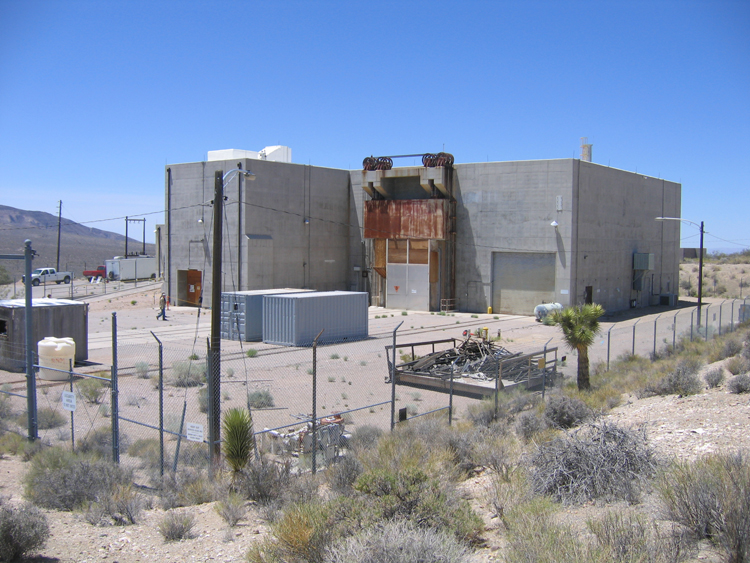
Recovery Act Workers Demolish Facility Tied to Project Pluto History

Before photo of the site of the Pluto Disassembly Facility show the Recovery Act at work at the Nevada National Security Site.
***

Recovery Act workers safely hauled the last demolition waste from the Pluto Disassembly Facility to disposal facilities Jan. 11, 2011. The project is slated for completion after workers finish installing a concrete cap over the below-ground level where the facility stood. “Without Recovery Act funding, the demolition of Pluto would not have been feasible for several more years,” Federal Sub-Project Director Kevin Cabble said.

In the late 1950s and early 1960s, the Pluto facility was used to develop the world’s first nuclear-powered ramjet engine for nuclear-propelled, low-altitude missiles.